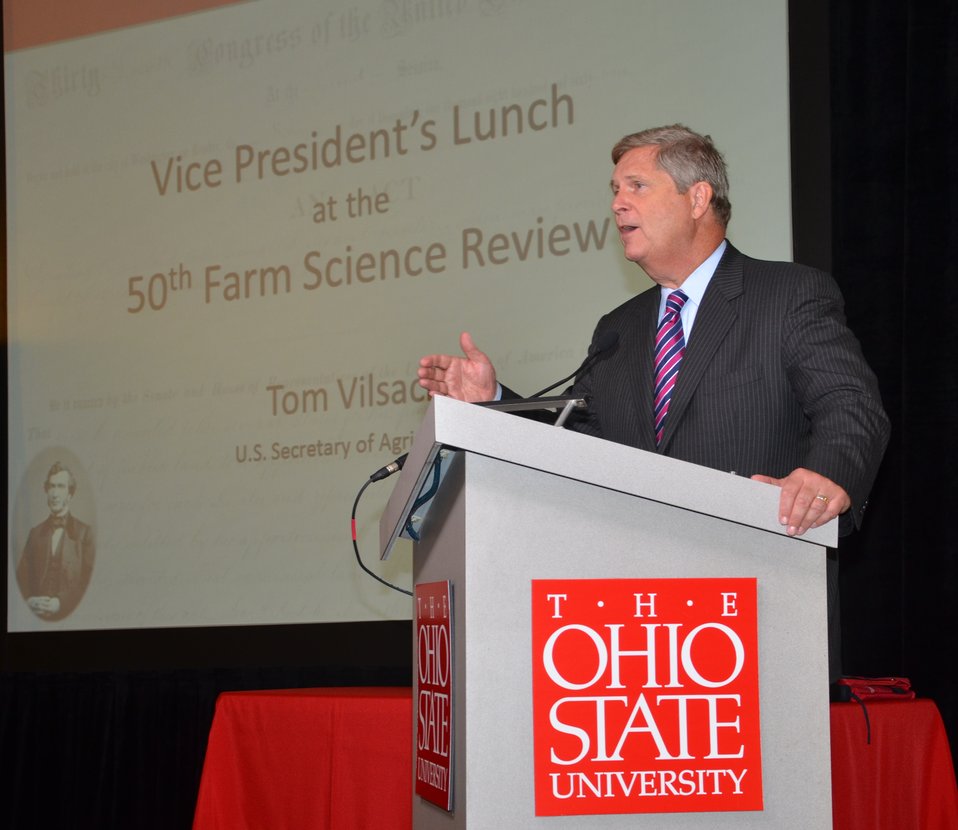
Agriculture Secretary Tom Vilsack speaking during the Vice President's Luncheon at the Farm Science Review, at Ohio State University in London, OH., on Tuesday, September 18, 2012.